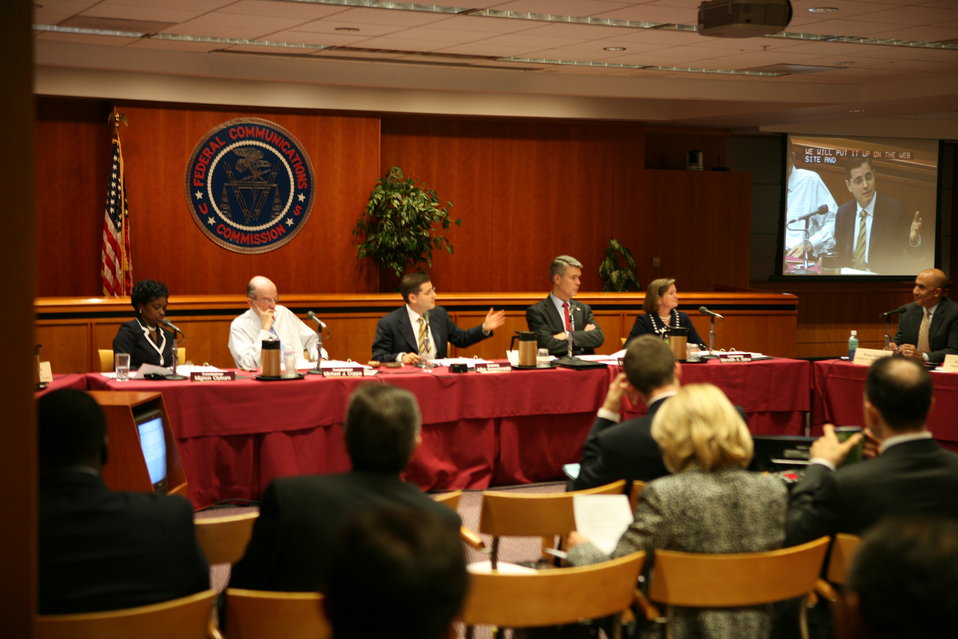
Midterm Review12

Broadband Midterm Review, 9-29-09